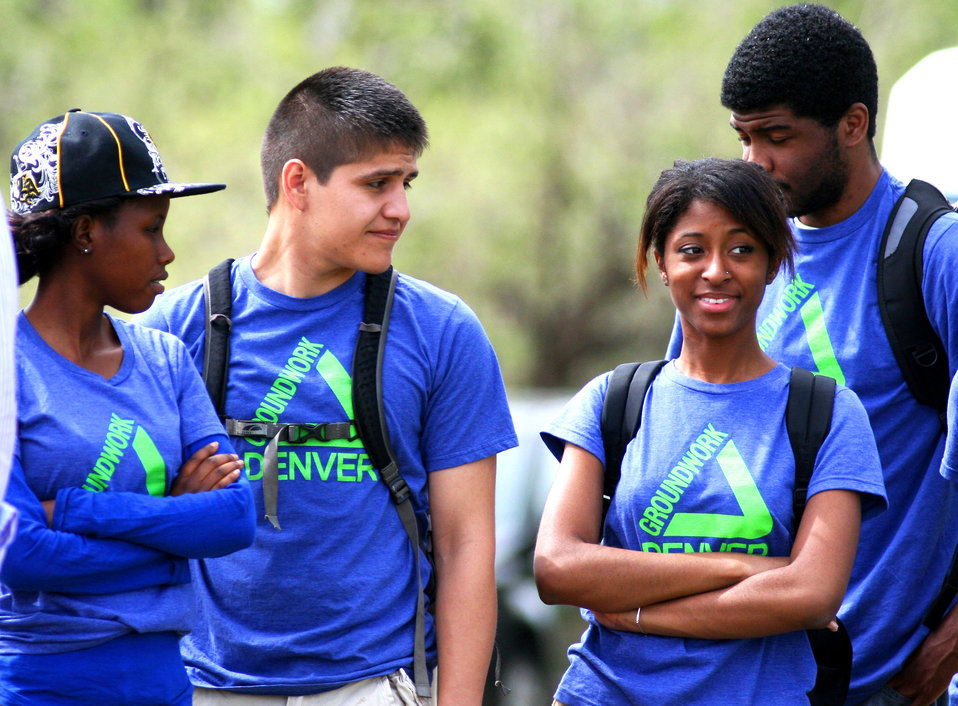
Groundwork Denver

Members of Groundwork Denver gather before a cottonwood planting project at the Rocky Mountain Arsenal National Wildlife Refuge.